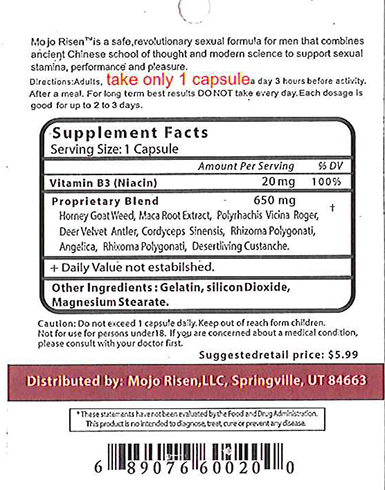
RECALLED – Dietary Supplement

April 1, 2014 – Product Recall – Nova Products, Inc. Issues Voluntary Nationwide Recall of Dietary Supplements with Undeclared Active Pharmaceutical Ingredients.